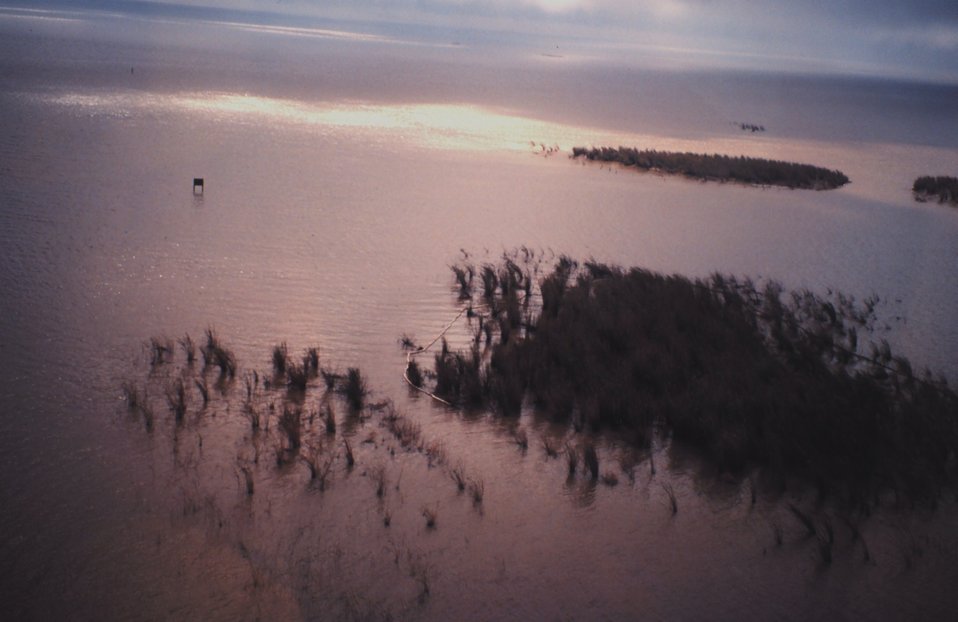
Boomed marshes containing oil spill